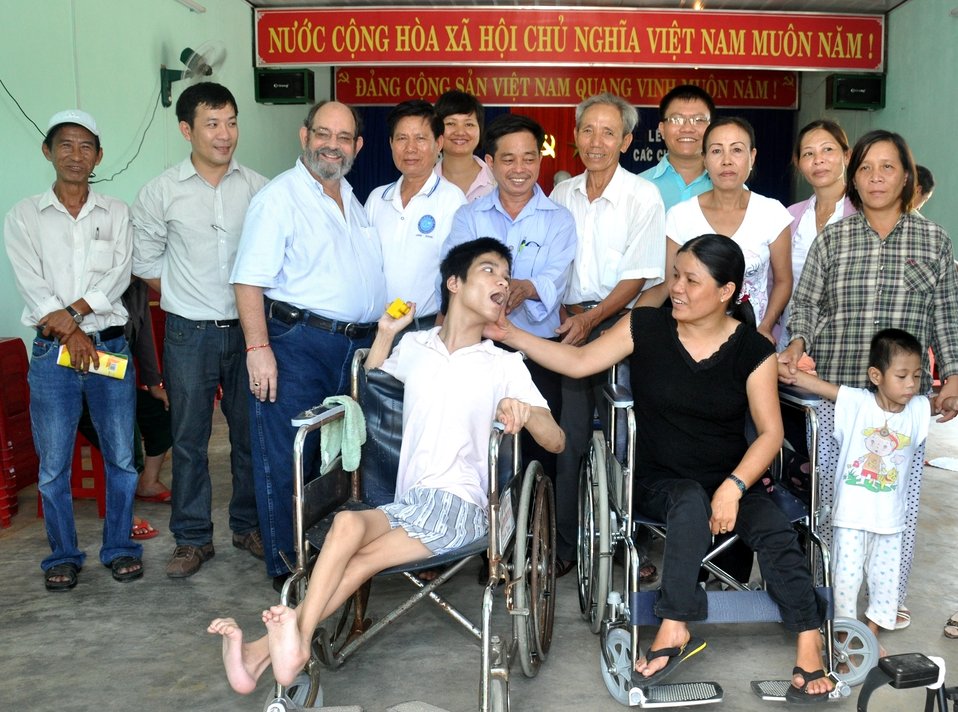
USAID supports a community rehabilitation unit in Danang.

Danang, June 10, 2013.